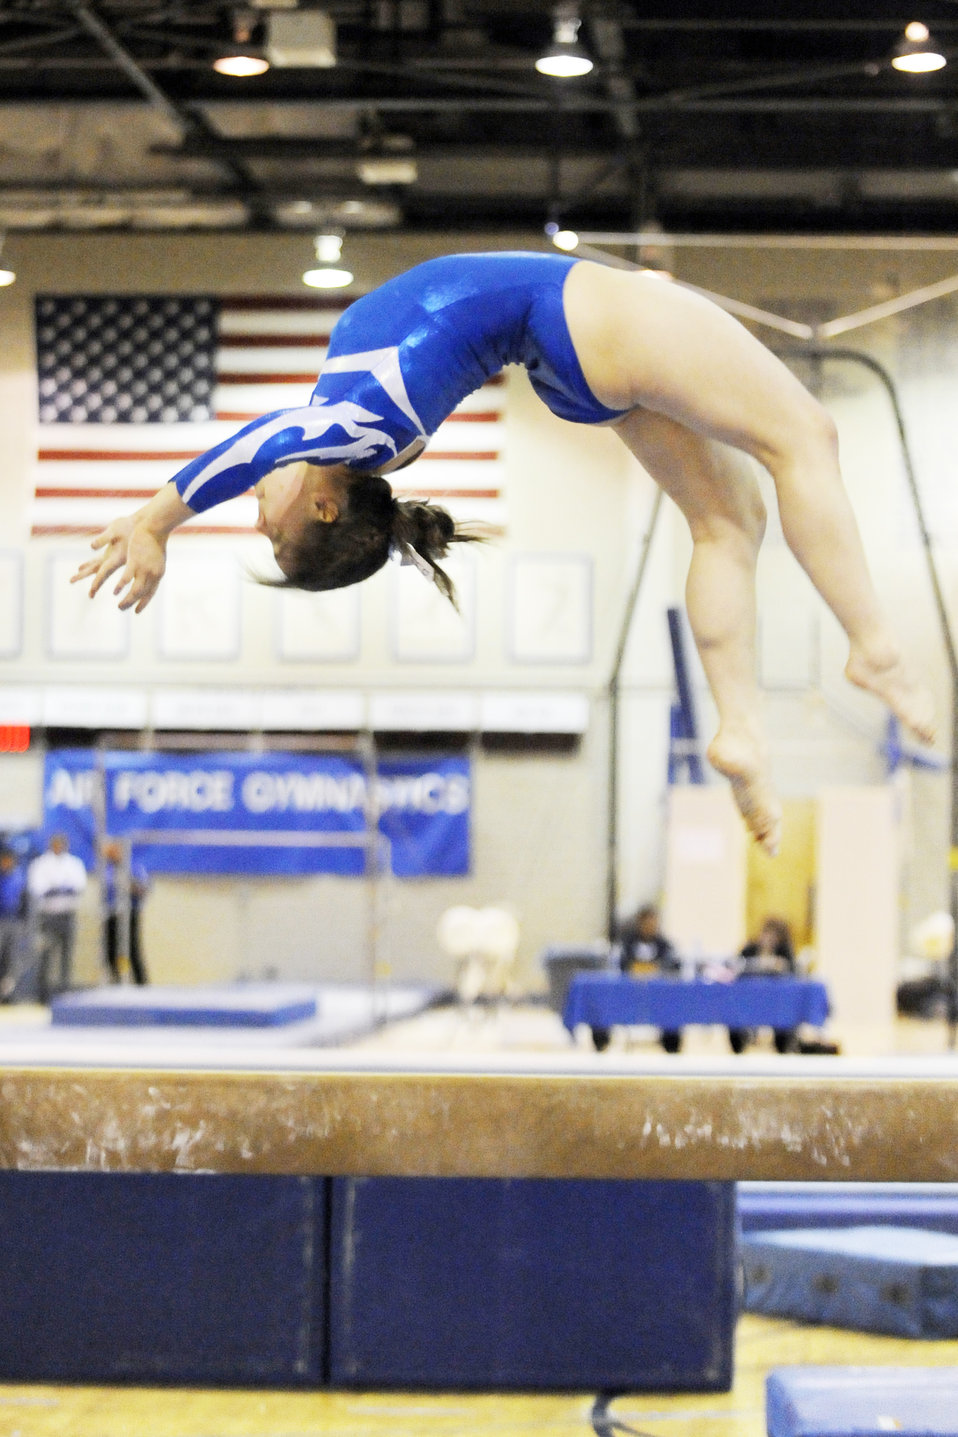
Falcon gymnasts compete against UC Davis

U.S. Air Force Academy sophomore Jenna Dudley does a backflip while competing on the balance beam during the meet against University of California Davis Jan. 30, 2010, in the Cadet Gymnasium in Colorado. Air Force lost the meet 191.575 to 185.300 despite two event titles. Dudley took the title in the floor exercise with a tally of 9.775. Dudley finished in the top five of every event and placed second in the all-around with a score of 38.425.